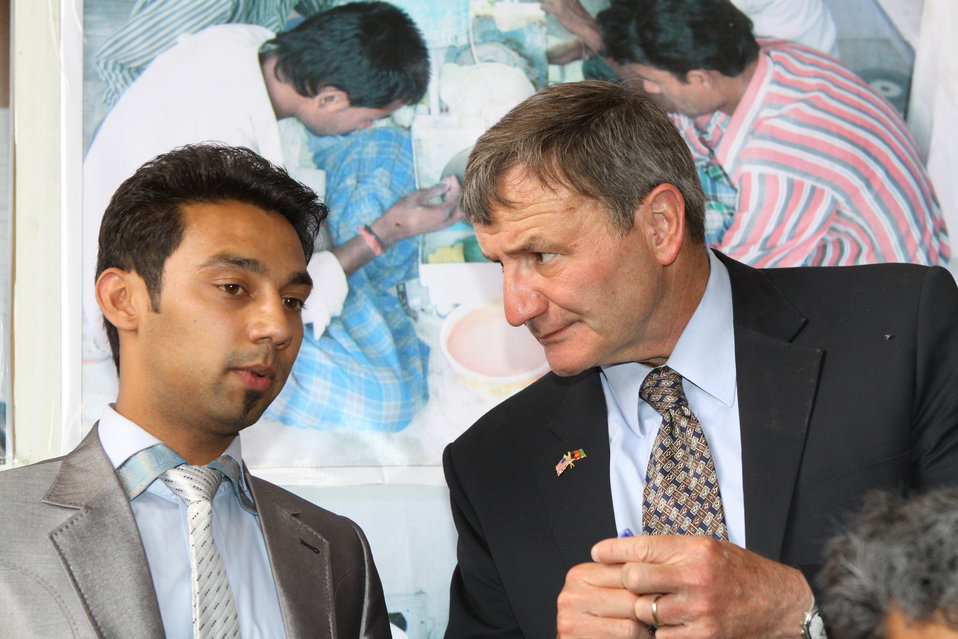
100525 Hirat Marble Conference 516